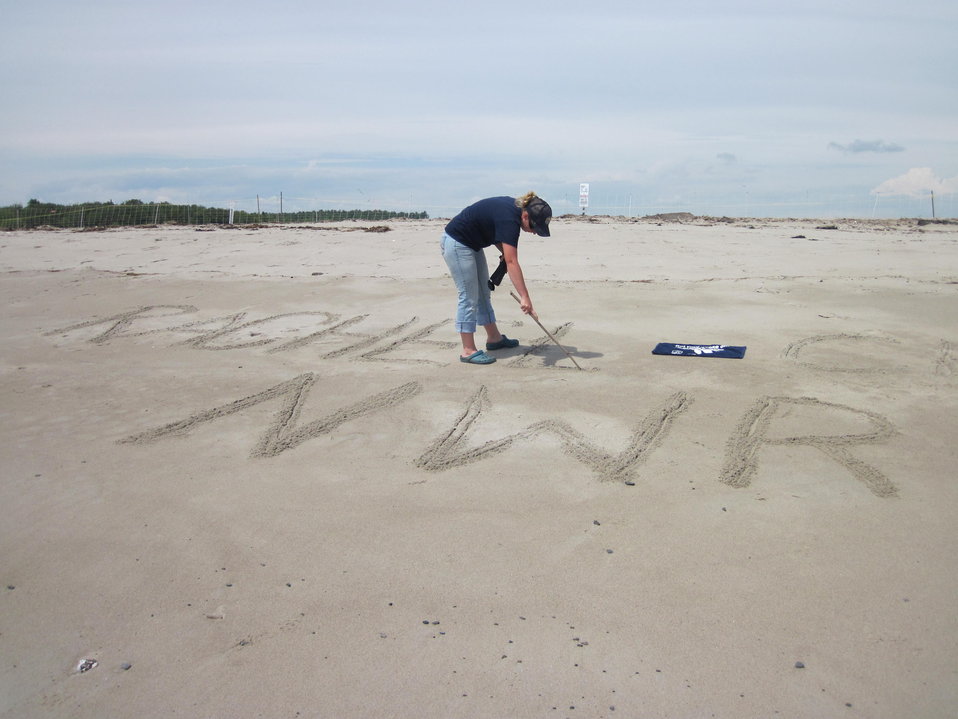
Get Your Goose On!

What's Bri writing?